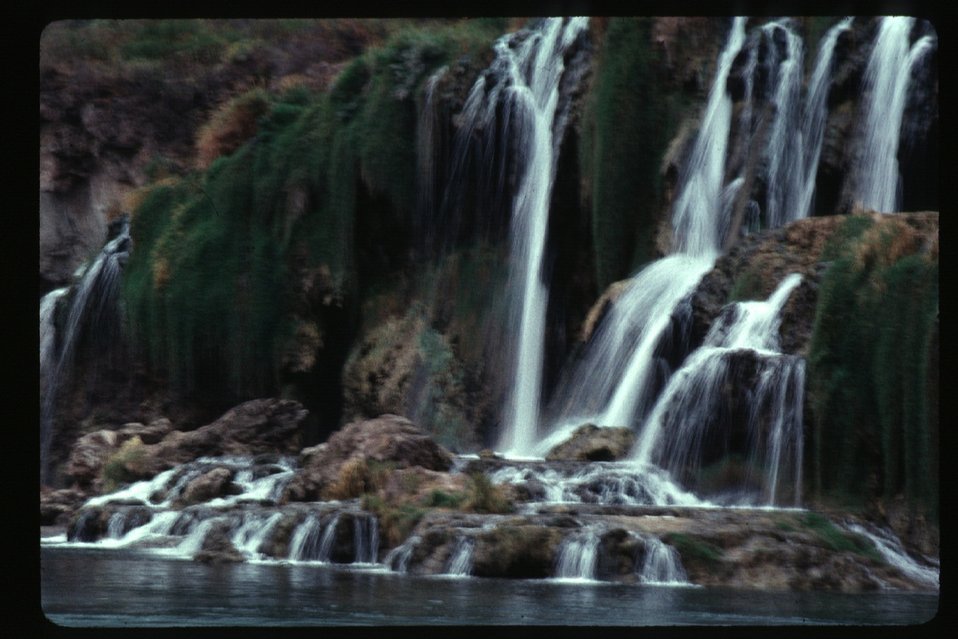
Scenic USRD Upper Snake River District